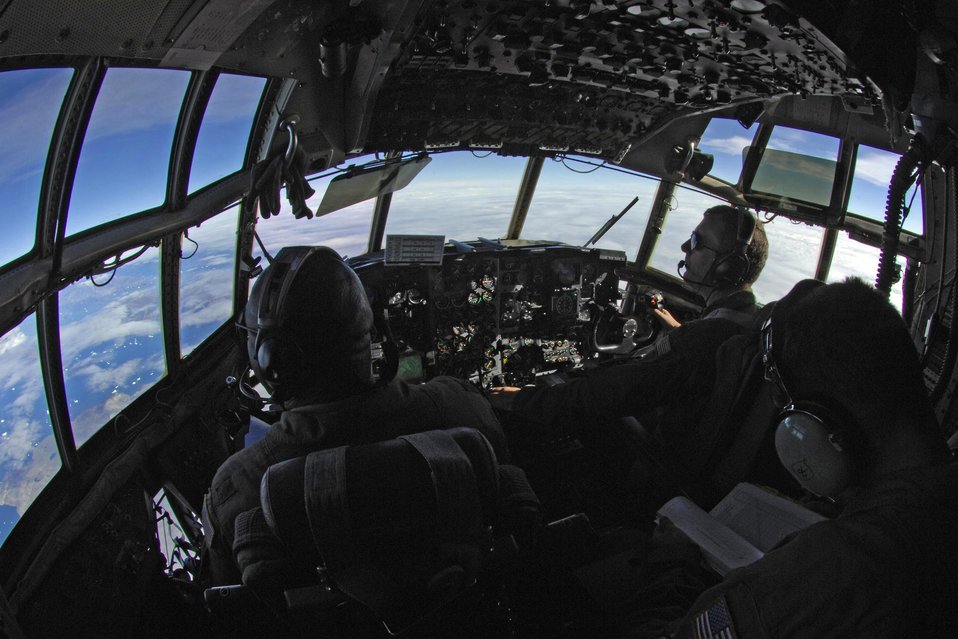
Polar mission

Maj. Leroy Kinlocke (left) and his co-pilot, Lt. Col. George Alston, have a front-row view of the diverse landscape July 28, 2010, in Greenland. The pilots are with the New York National Guard's 109th Airlift Wing, based out of Scotia, N.Y.